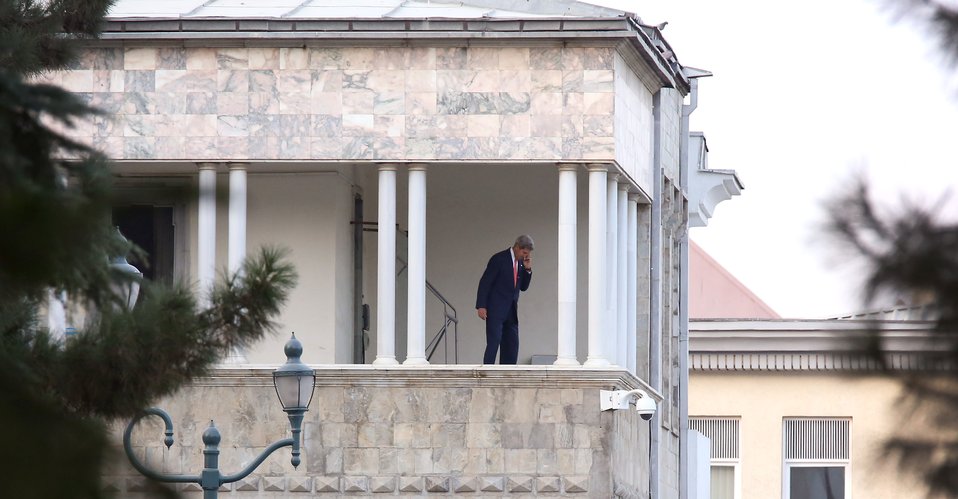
Secretary Kerry Works on Afghan Bilateral Security Agreement

U.S. Secretary of State John Kerry talks on his cellular phone during a break in discussions with Afghan President Hamid Karzai at the Presidential Palace on Saturday, October 12, 2013 in Kabul.